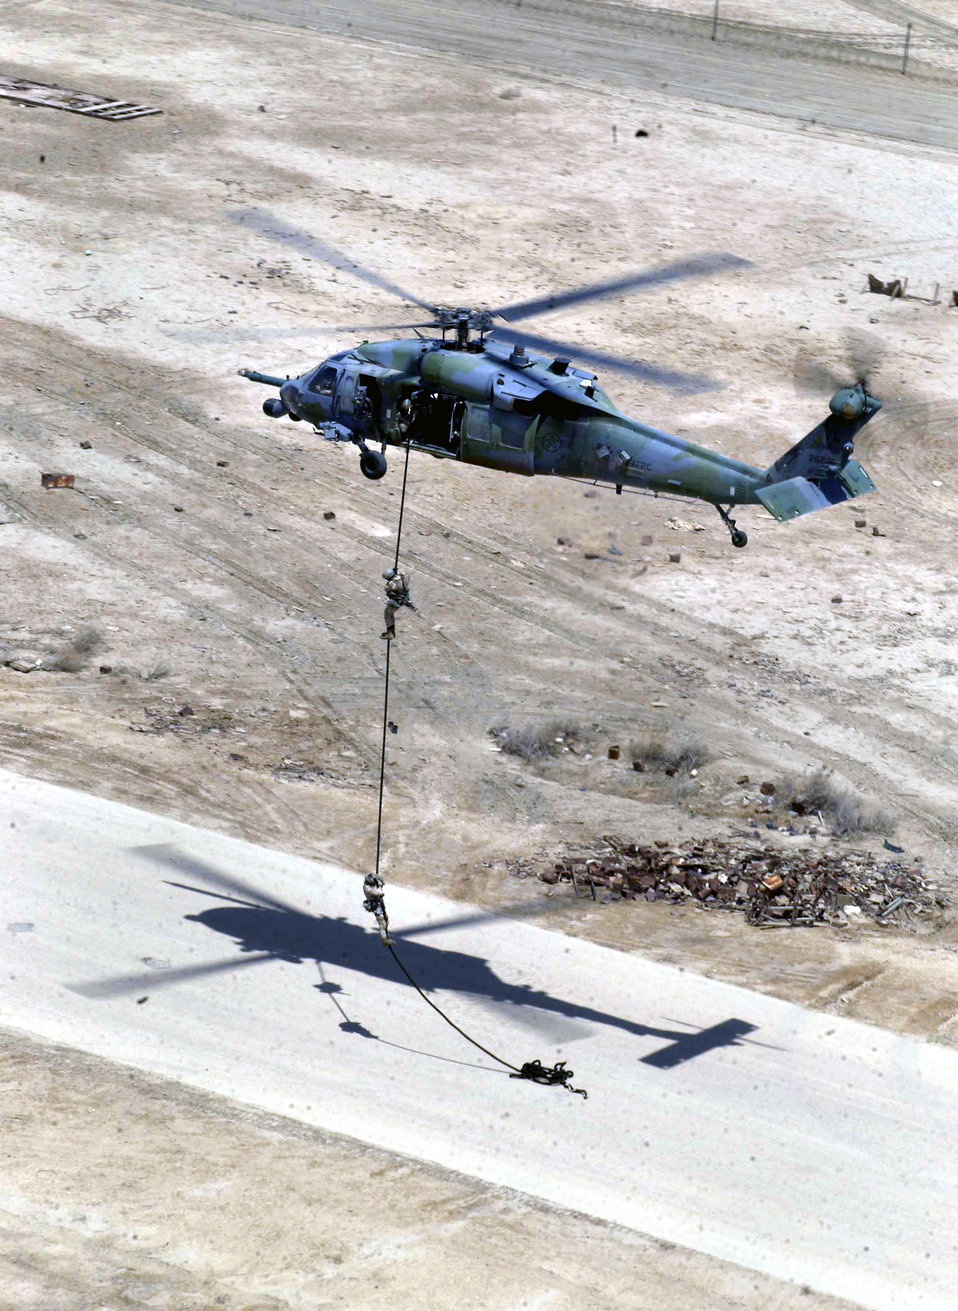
Fast rope

OPERATION IRAQI FREEDOM -- Pararescuemen from the 304th Rescue Squadron fast rope from an HH-60G Pave Hawk April 18, 2003 at Tallil Air Base, Iraq during Operation Iraqi Freedom.